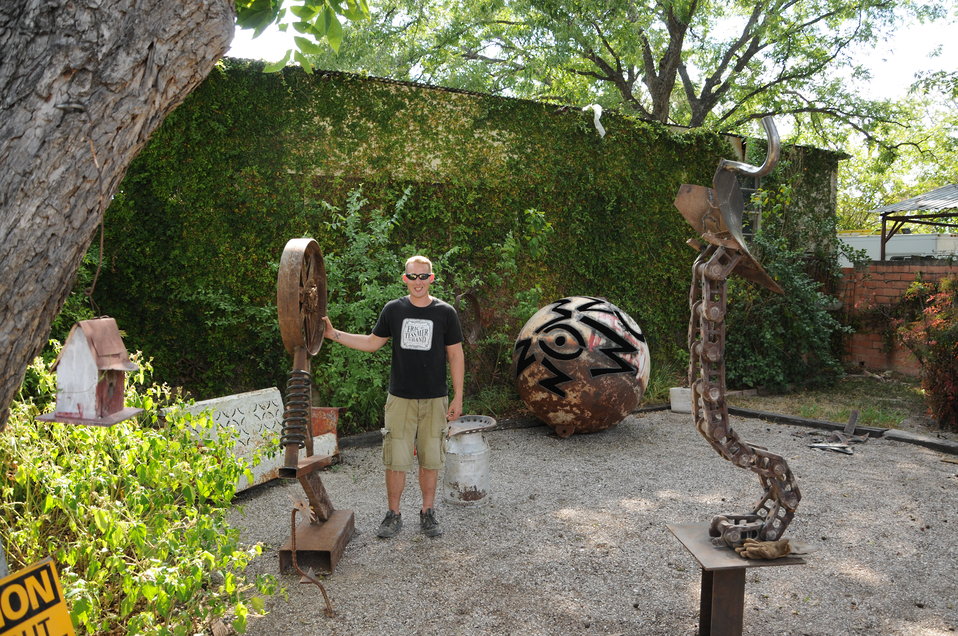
Forging lasting art

Staff Sgt. Grant Dupill, a medical technician in the 47th Medical Group, poses in his sculpture garden behind his home in Del Rio. He taught himself how to weld, so he could begin creating art, a life-long dream.